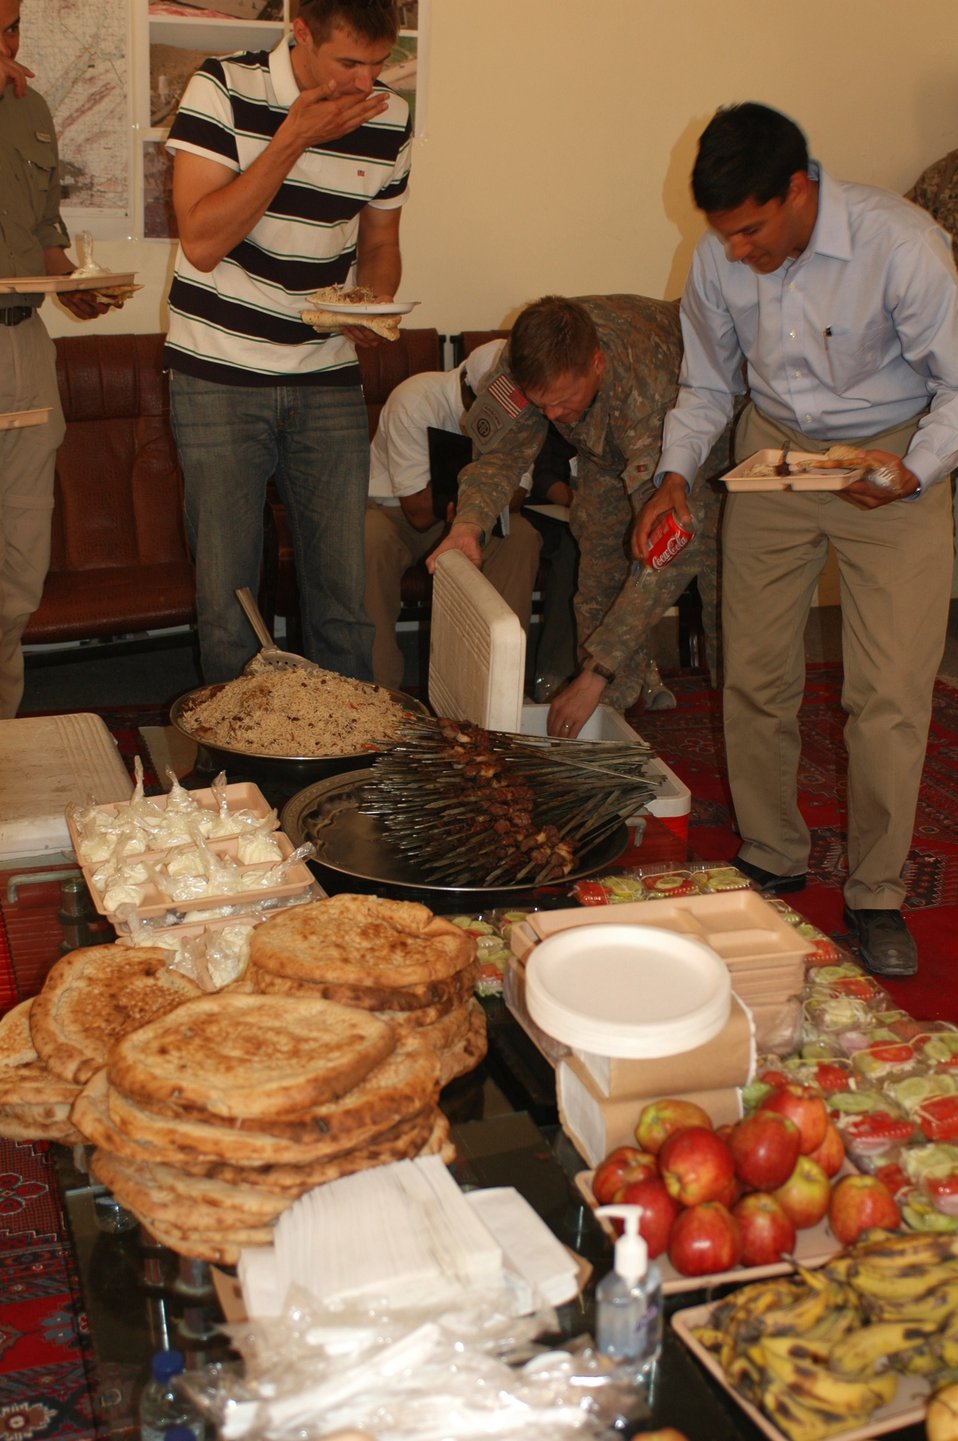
Dr Shah Visits Argandab April 10, 2010